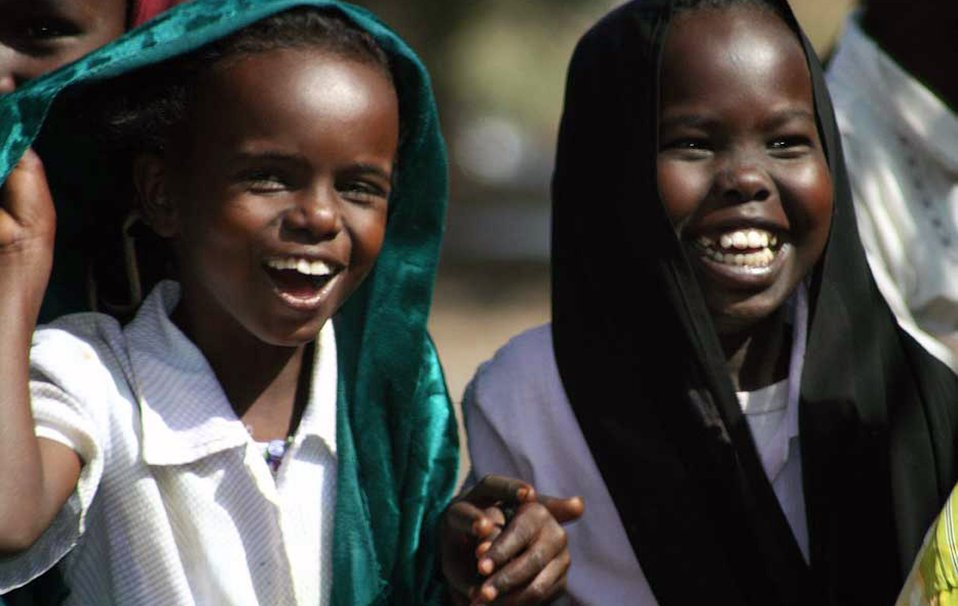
Djiboutians delight in the sounds of

Children laugh and giggle during a schoolyard performance by the United States Central Command Air Forces Expeditionary Band